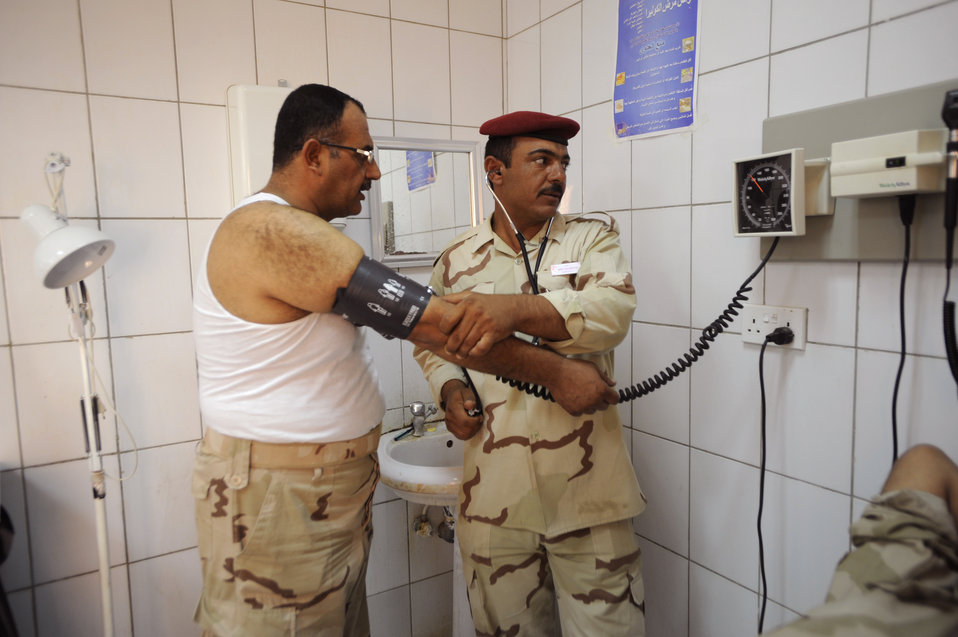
Medical advisers guide Iraqi army back into patients' trust

An Iraqi medical technician exams a fellow soldier in the clinic Aug. 17, 2009, at Camp Ur, Iraq. The Iraqi camp boasts a fully functioning medical clinic complete with a three-bay emergency room, pharmacy, dentist, radiology department and public health, as well as a highly trained team of doctors, nurses and technicians on staff.